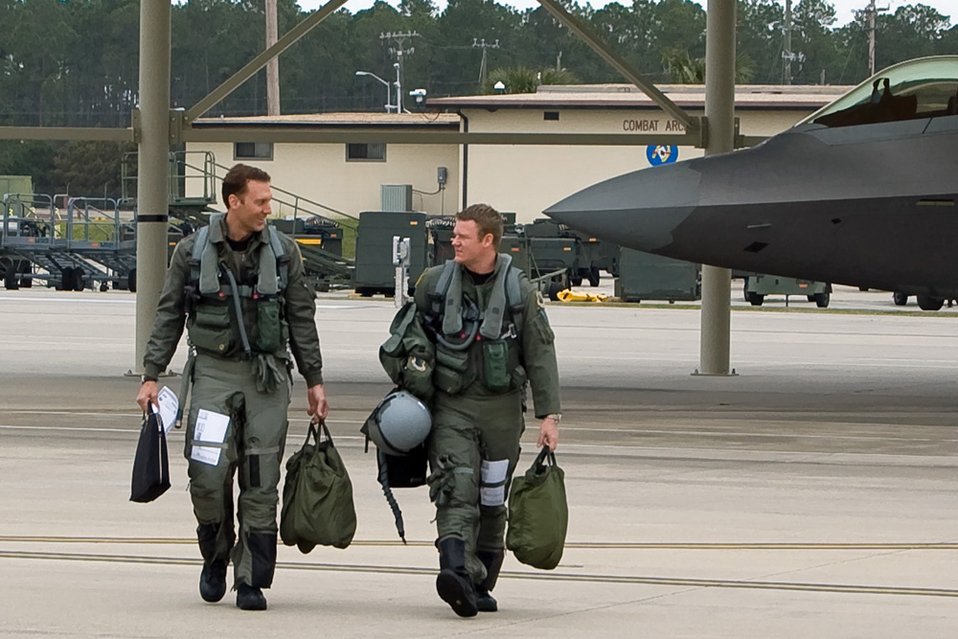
Elmendorf Airmen complete first F-22 deployment

Maj. David Pifferario and Capt. Ryan Pelkola walk to their F-22 Raptors Feb. 4 at Tyndall Air Force Base, Fla. Members of the 3rd Wing and Air Force Reserve Command's 477th Fighter Group from Elmendorf AFB, Alaska, combined for its first F-22 deployment to Tyndall AFB for Combat Archer. The 132 Reserve and active-duty Airmen and eight F-22s from Alaska were in Florida for Weapons System Evaluation Program training. Colonel Shower is the 90th Fighter Squadron commander. Major Pifferario is a 302nd Fighter Squadron F-22 pilot and Captain Pelkola is a 90th Fighter Squadron pilot.